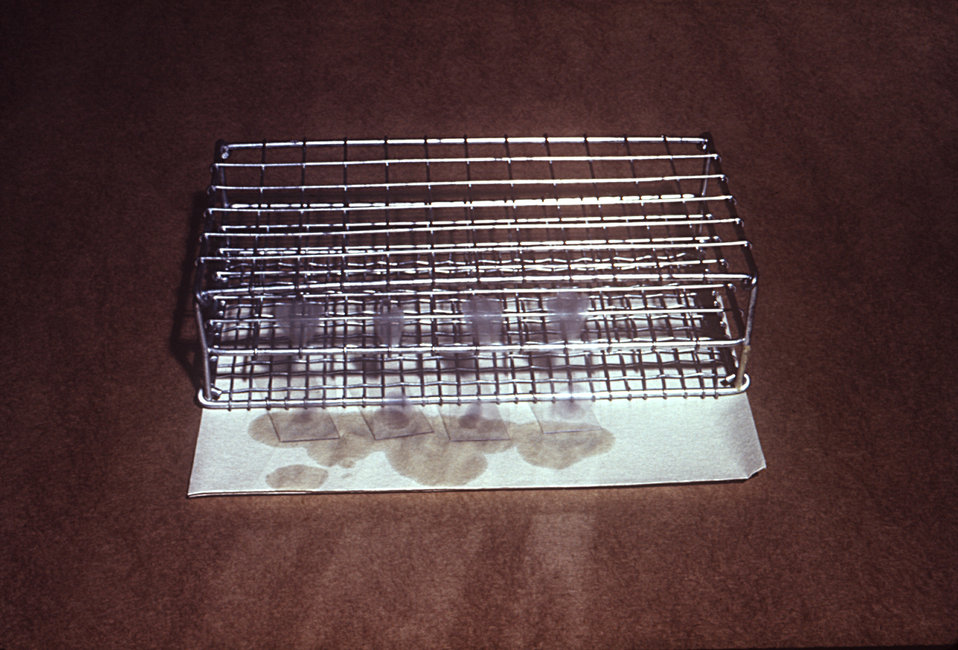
These glass slides, having been Giemsa stained and rinsed, are now in the process of being air dried in a vertical position.